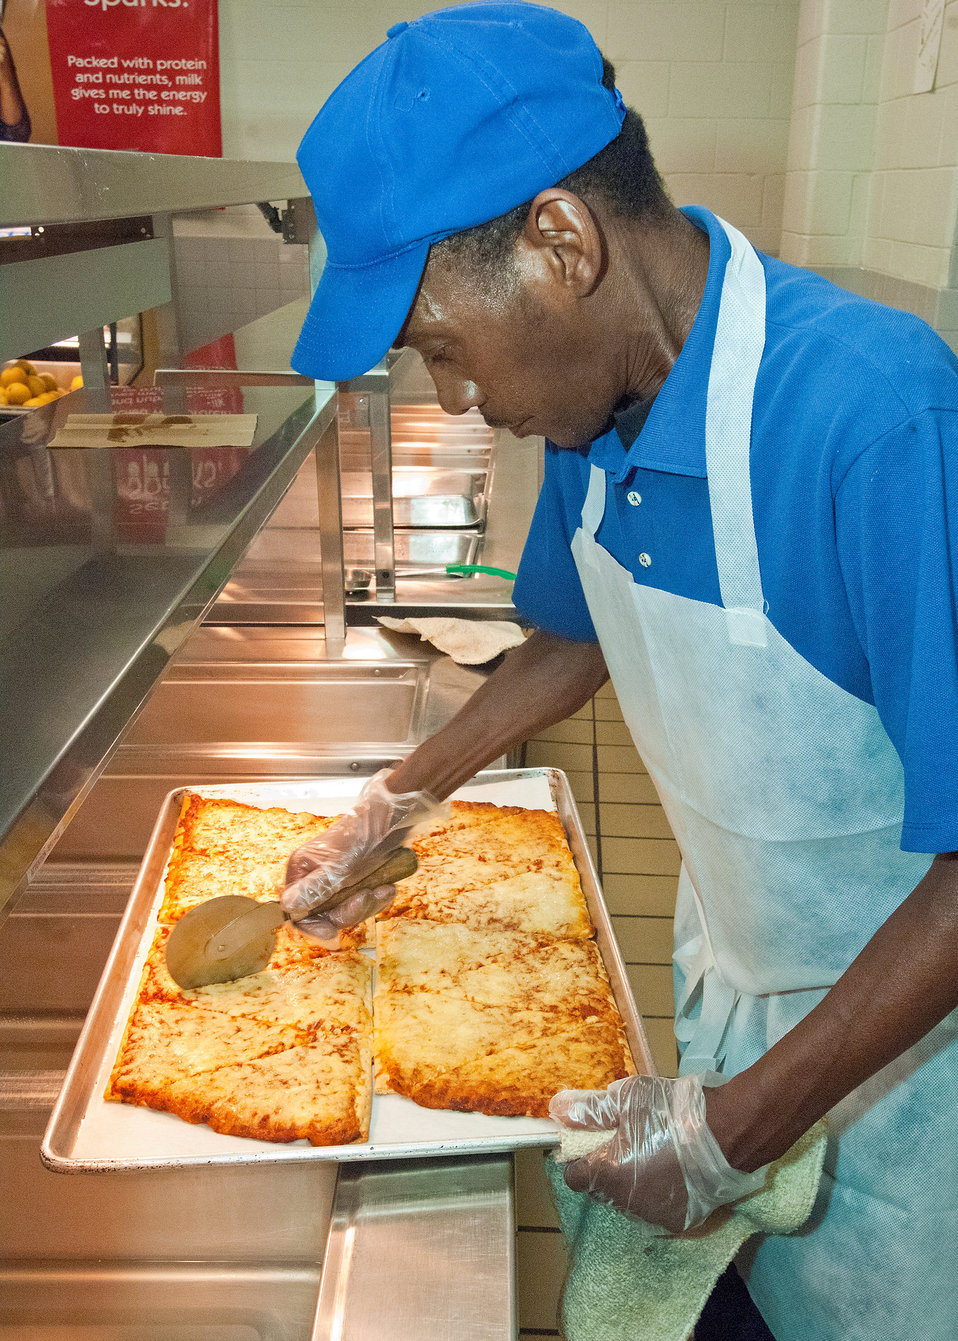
Michael Wilson, Arlington Food Services slices pizza for the National School Lunch Program at Washington-Lee High School in Arlington, Virginia, on Wednesday, October 25, 2011. The National School Lunch Program is a federally assisted meal program administered by the United States Department of Agriculture, Food and Nutrition Service operating in public, nonprofit private schools and residential child care institutions. It provides nutritionally balanced, low-cost or free lunches to children each school day.